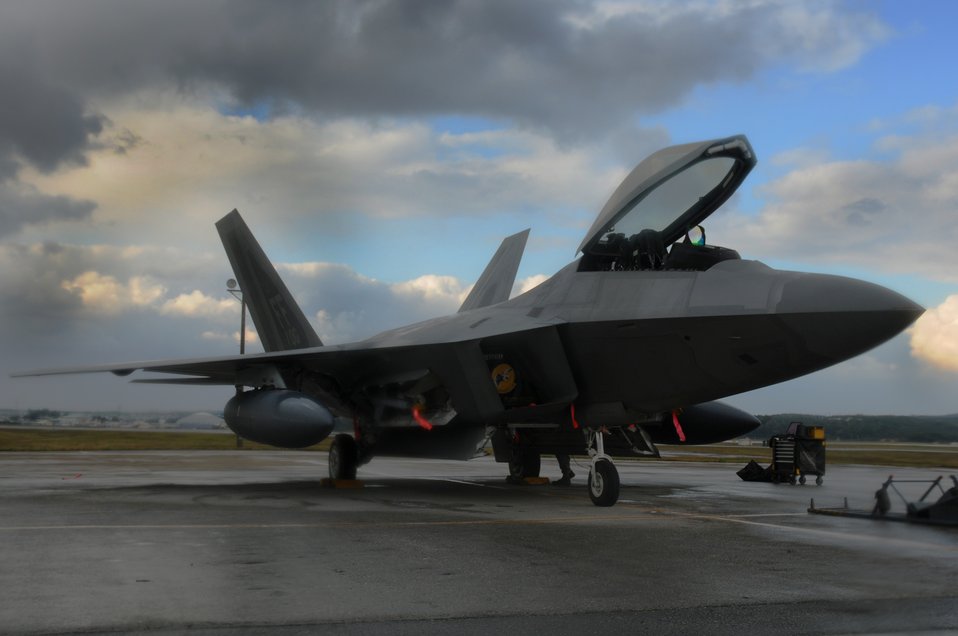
Largest deployment of F-22s under way

An F-22 Raptor cools down after a 10-hour flight Jan. 10 from Hickam Air Force Base, Hawaii, to Kadena Air Base, Japan. The aircraft is one of 12 deployed from Langley AFB, Va., as part of an air and space expeditionary force rotation.